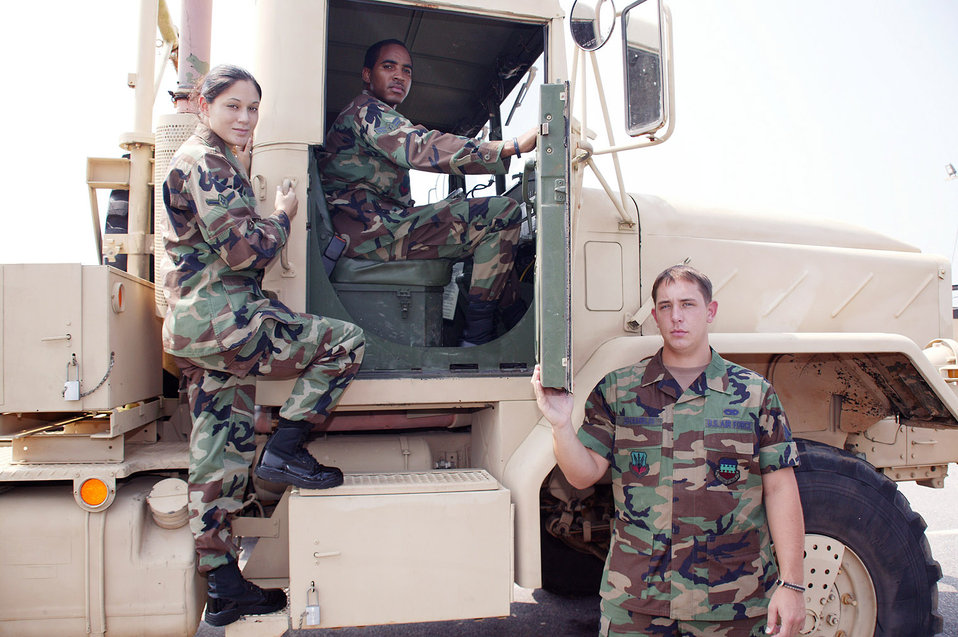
Airmen train for convoy duty in Southwest Asia

SHAW AIR FORCE BASE, S.C. -- (From left) Airman Christina Chavez, Airman 1st Class Maurice McCormick and Senior Airman Randy Shamblin are deploying to support convoy operations in Iraq. Airmen have been supporting Army convoy operations since 2003. The Airmen are assigned to the 20th Logistics Readiness Squadron here.